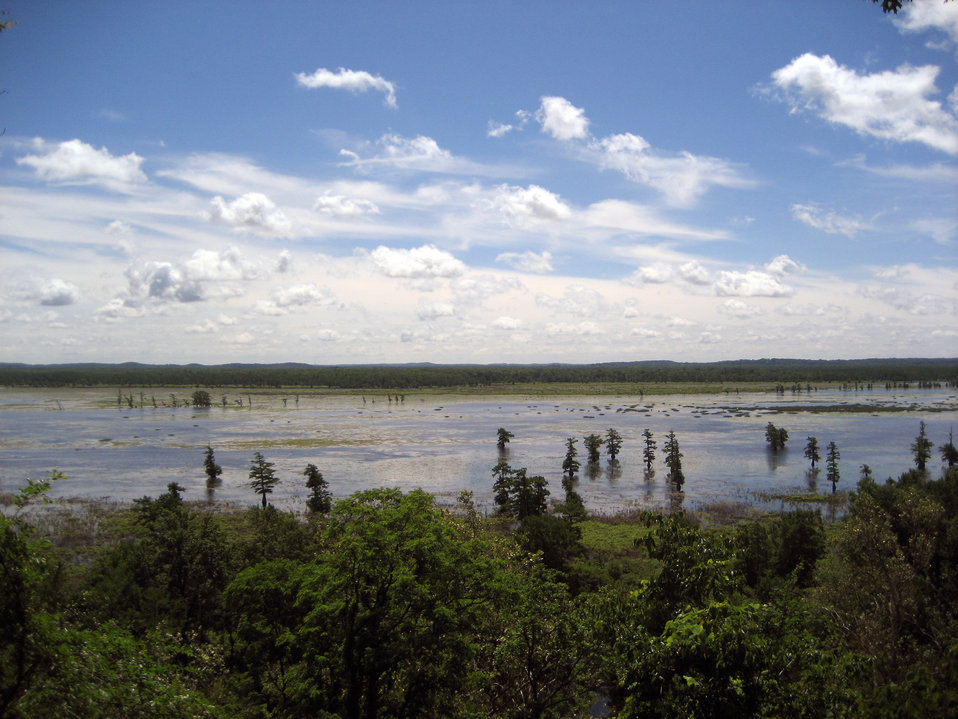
Reflections at Mingo National Wildlife Refuge

Mingo National Wildlife Refuge.